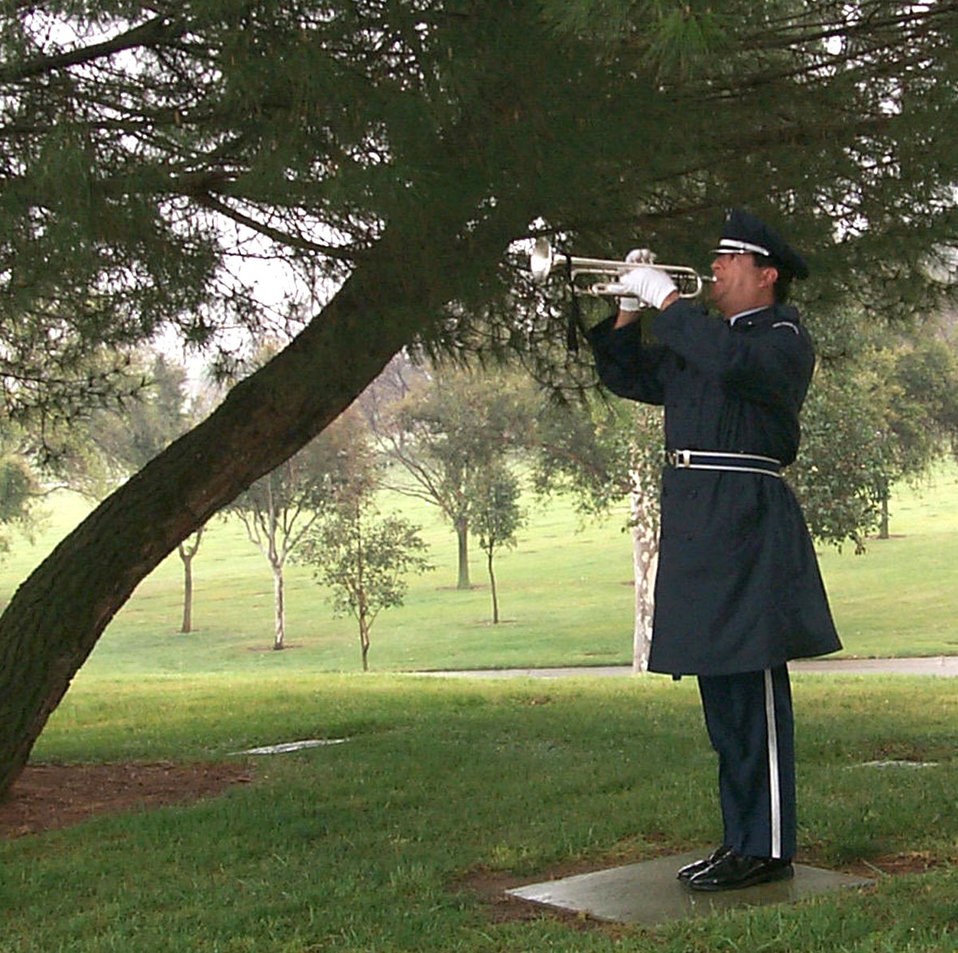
VA seeks buglers to play 'Taps' at national cemeteries

Hundreds of volunteer buglers and trumpeters are being sought to participate in Armed Forces Day observances held at veterans' cemeteries nationwide and overseas. The event, called